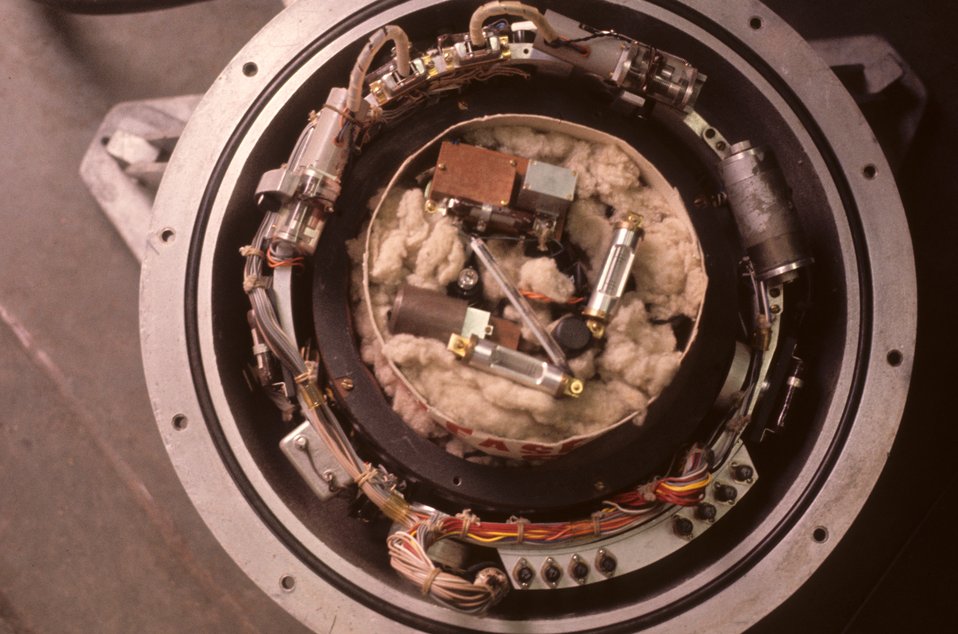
The internal electronics of a bottom-mounted gravity meter.